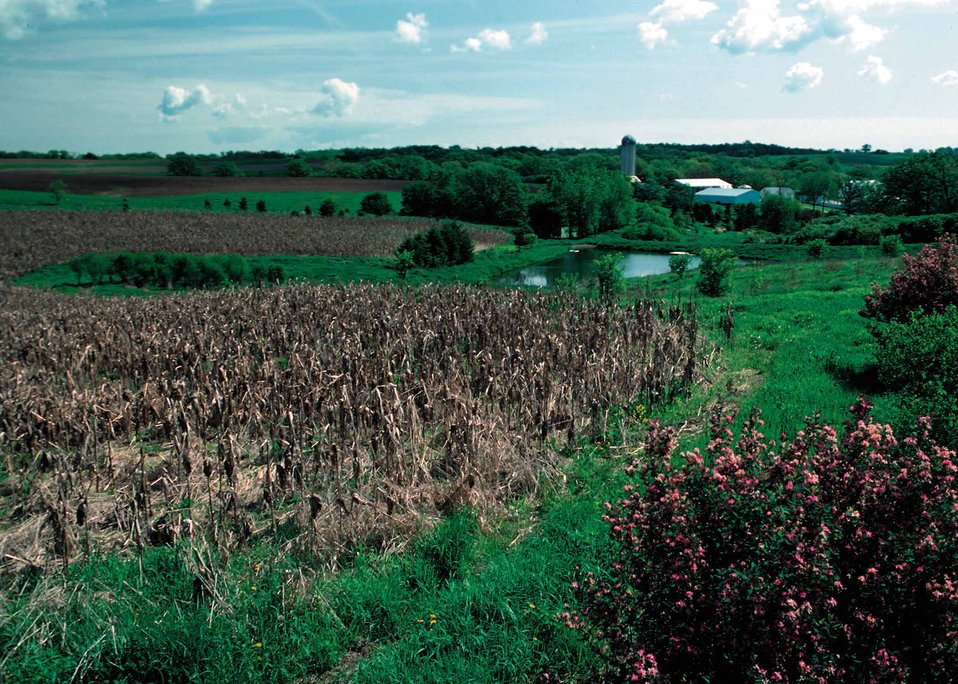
Corn is planted and left for a wildlife food plot as part of a wildlife area in Jackson County, Iowa.